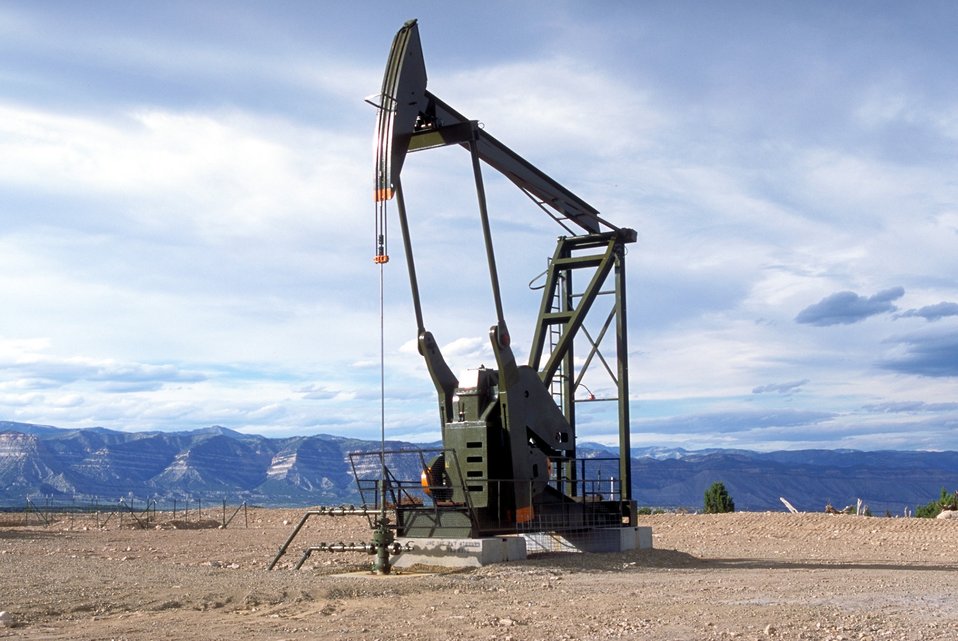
Pump unit producing coal bed methane near Price, Utah.